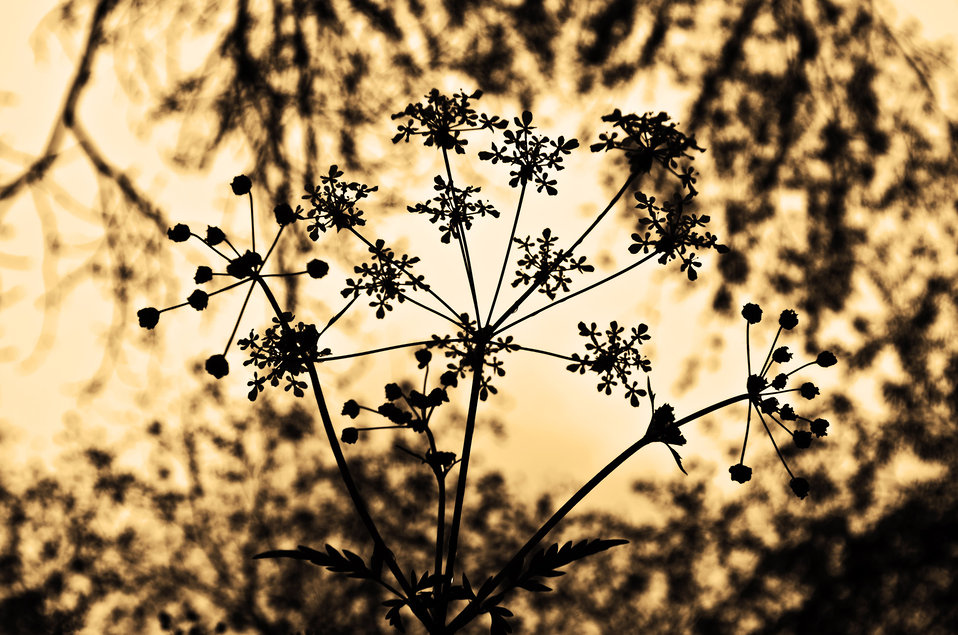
Plant - macro.